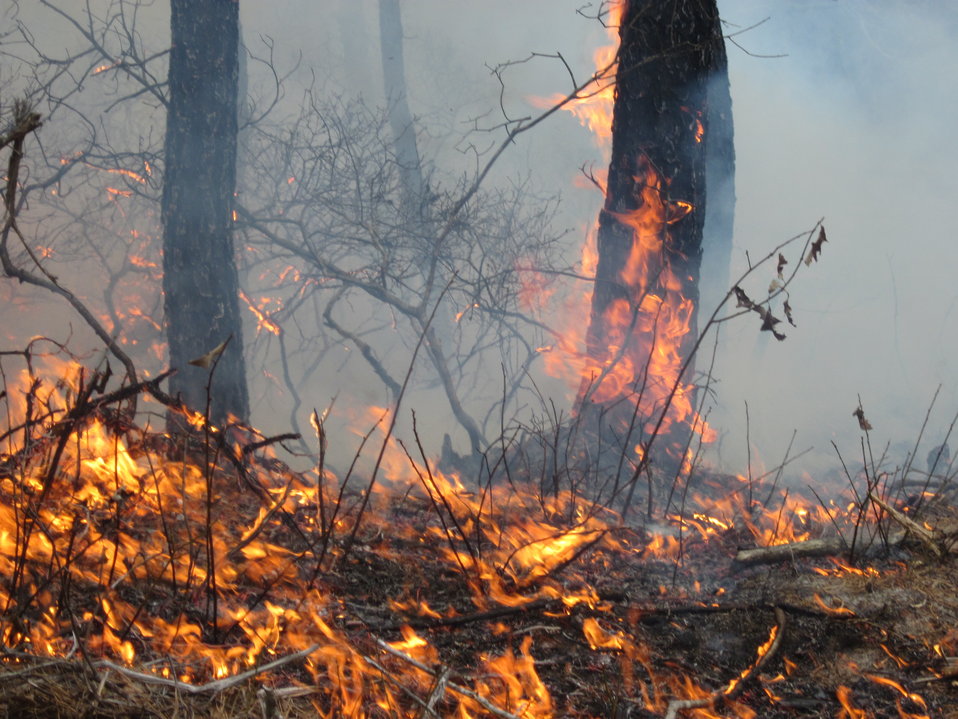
Burning for People and Wildlife

Mashpee, Massachusetts, April 5, 2012. Fire once naturally cleared brush in pine barrens on Cape Cod. Here, a controlled burn on the Town of Mashpee Holland Hill Barrens area of Mashpee National Wildlife Refuge clears overgrown brush under fire-resistant pitch pine trees. This reduces fire risk to neighboring homes and stimulates growth of oak stems, important for the rare New England cottontail. The burn was conducted by the Town of Mashpee, U.S. Fish and Wildlife Service, State of Massachusetts Department of Conservation and Recreation, and Northeast Forest and Fire Management.